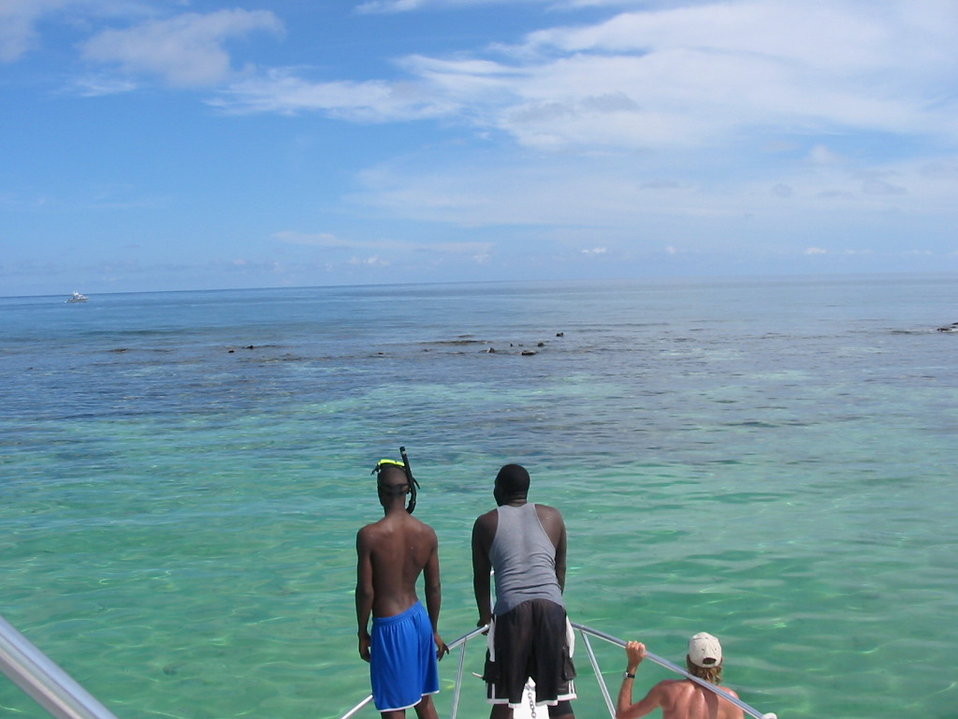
Uploaded by request of Alanna Conley

Taken in Grand Cayman Island

Boating towards an area teaming with stingrays and coral reef off the coast of the Grand Cayman Islands.